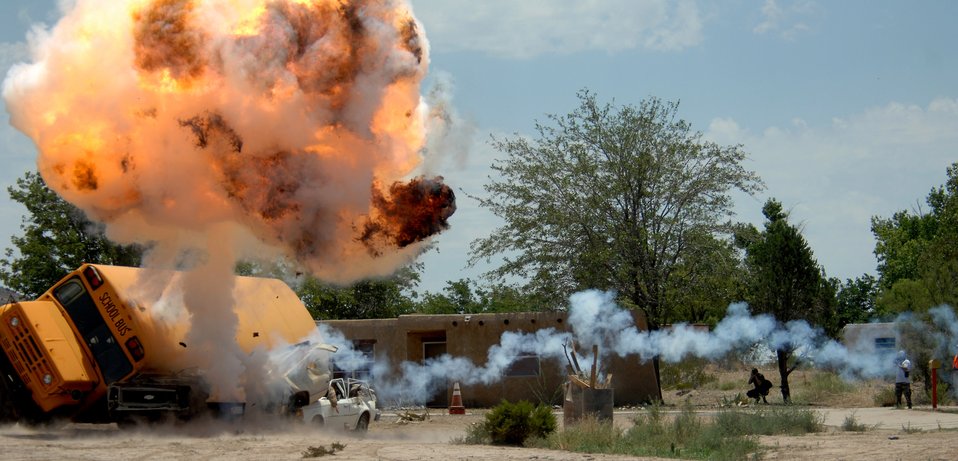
Simulated attack

Senior Airman Brendan Patterson shoots a rocket-propelled grenade to simulate an attack on a convoy during a mass casualty exercise at an urban training facility in Playas, N.M., July 18 as part of Exercise Angel Thunder.